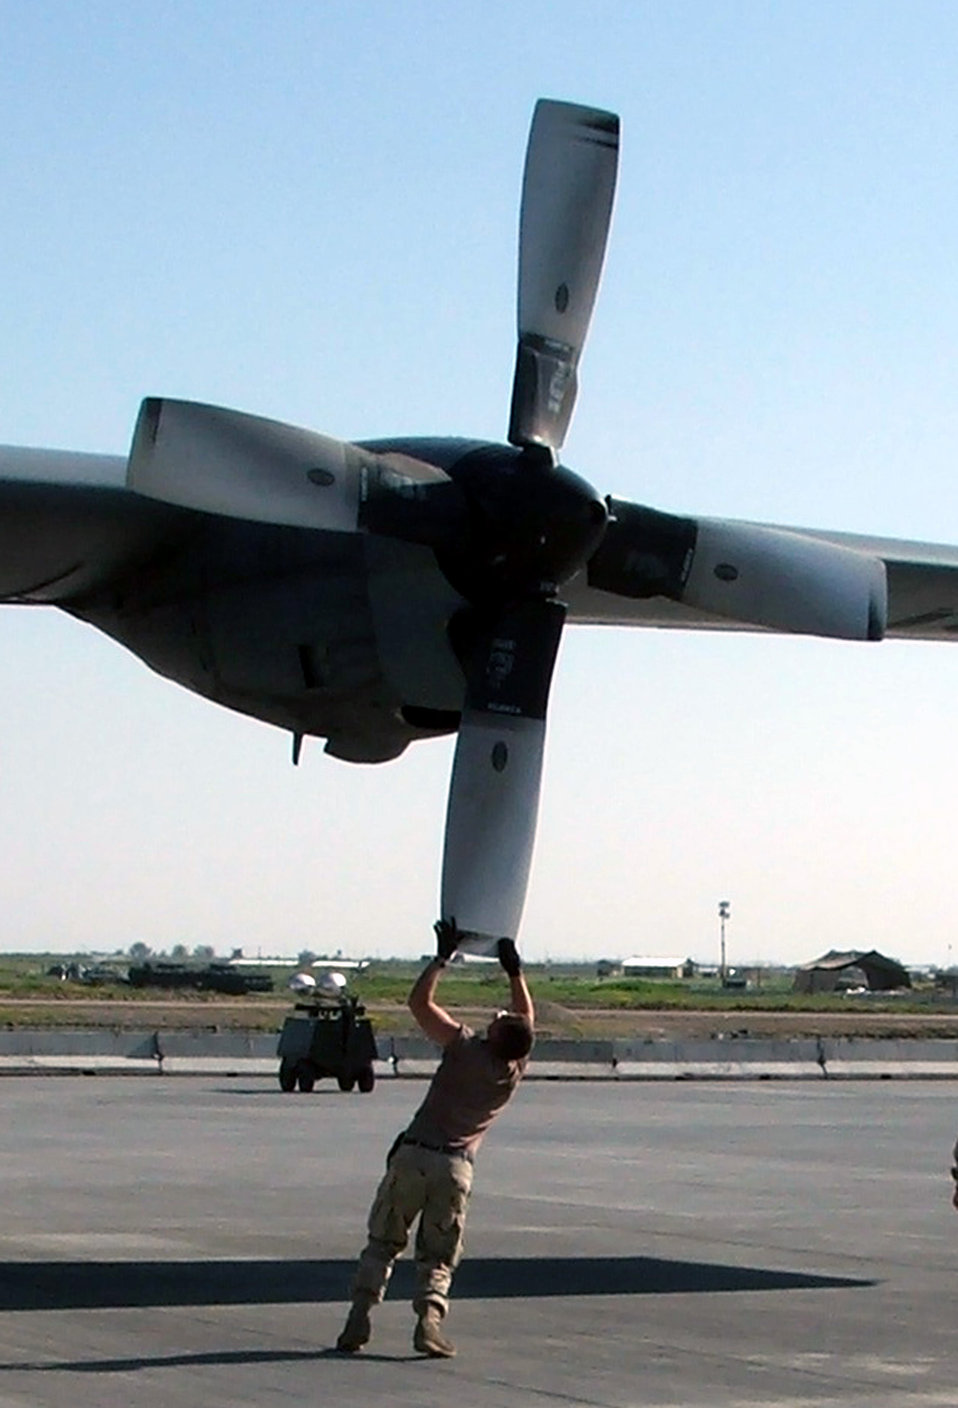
C-130 maintainers keep mission-capable rates high

KARSHI-KHANABAD AIR BASE, Uzbekistan -- Airman 1st Class David Solis pushes a C-130 Hercules propeller into place during an aircraft recovery here April 14. He is a C-130 crew chief with the 774th Expeditonary Airlift Squadron and is deployed from Elmendorf Air Force Base, Alaska.